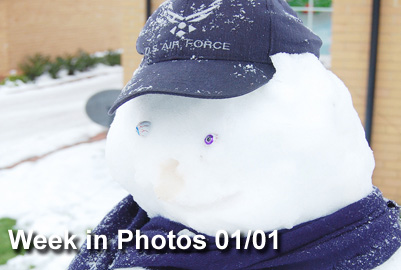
Week in Photos

Air Force Week in Photos for Jan. 1, 2010, highlights photos from around the Air Force. In this photo by Tim Barlow, some people built snowmen in their yards in base housing at Royal Air Force Lakenheath, England, Dec. 22, 2009, after a night of heavy snow and ice. As soon as it began to warm, this snowman lost his nose.